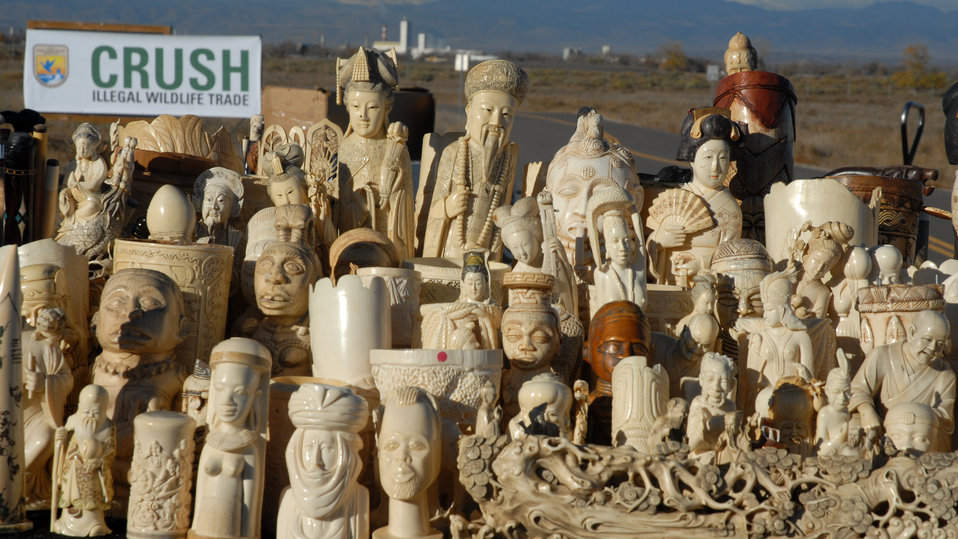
USFWS is sending a clear message that the nation will not tolerate wildlife crime that threatens to wipe out the African elephant.